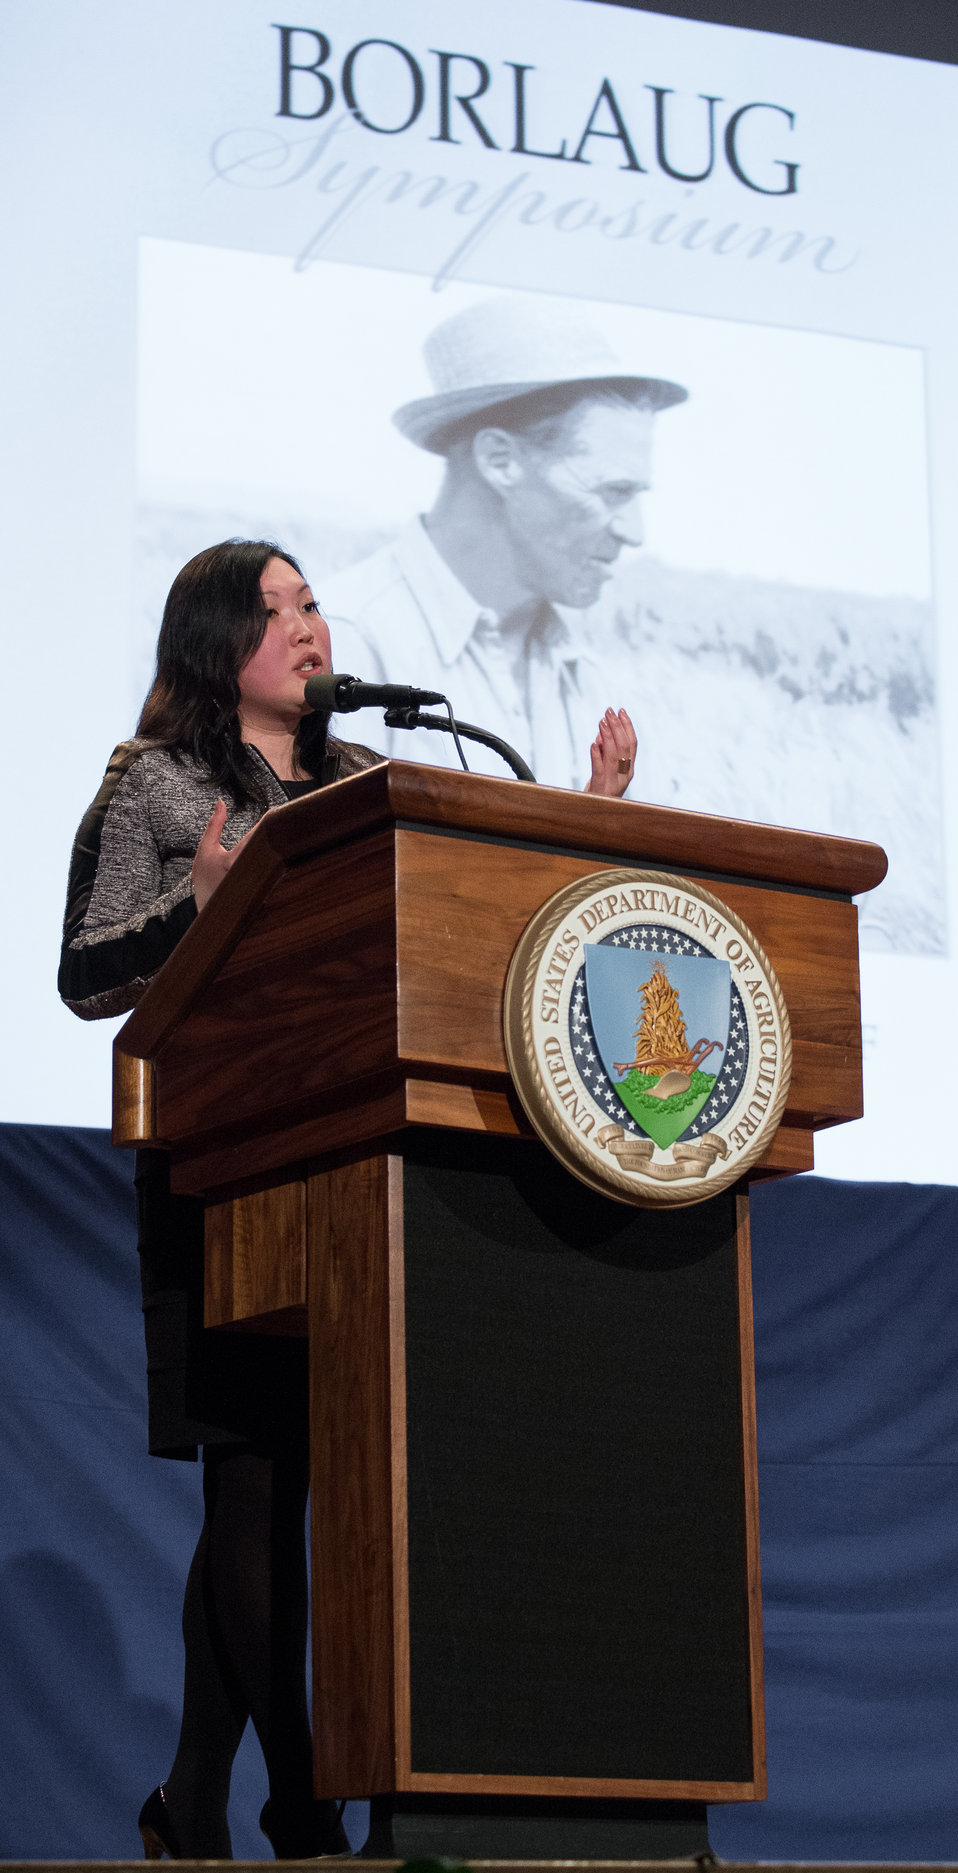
The World Food Prize Foundation Director of planning Bian Li presents her work to help achieve Dr. Borlaug’s vision as the next generation of hunger fighters at the Borlaug Symposium at the Borlaug Symposium commemorating the late Dr. Norman E. Borlaug's 100th Birthday hosted by the U. S. Department of Agriculture (USDA) in the Jefferson Auditorium of USDA in Washington, D.C. on Tuesday, Mar. 25, 2014. The symposium highlighted current efforts addressing global hunger.